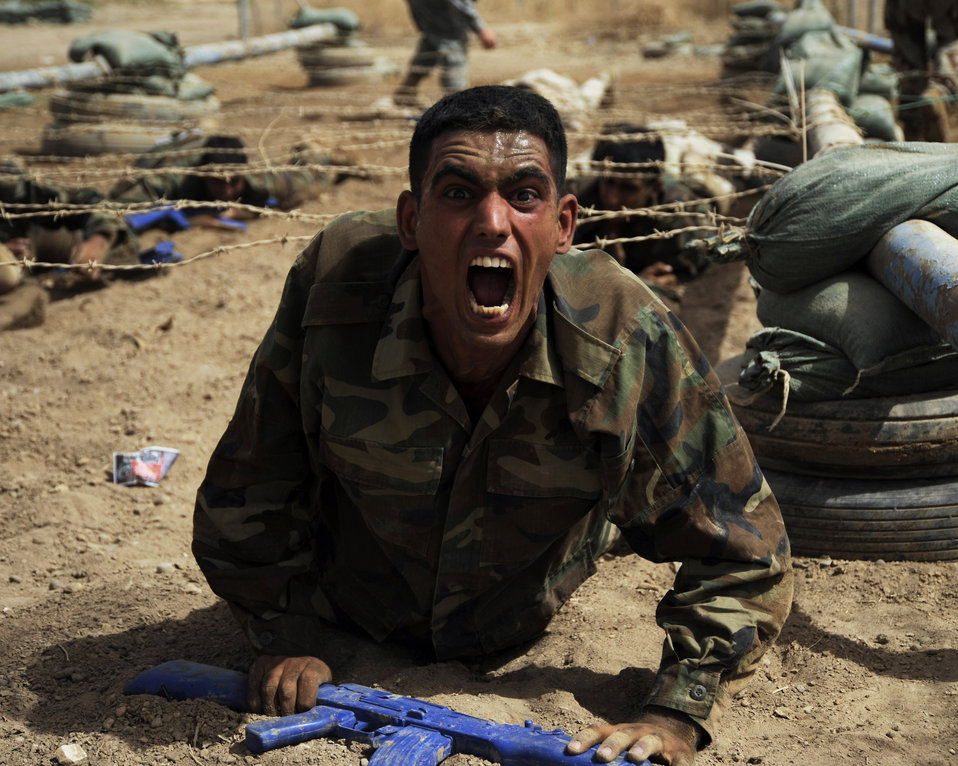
Training instructors build tactical course for Iraqi airmen

An Iraqi air force warrant officer shows his excitement after low crawling under barbed wire during his run of the basic military training tactical course while carrying his blue training rifle at Al Taji Air Base, Iraq, Sept. 27.